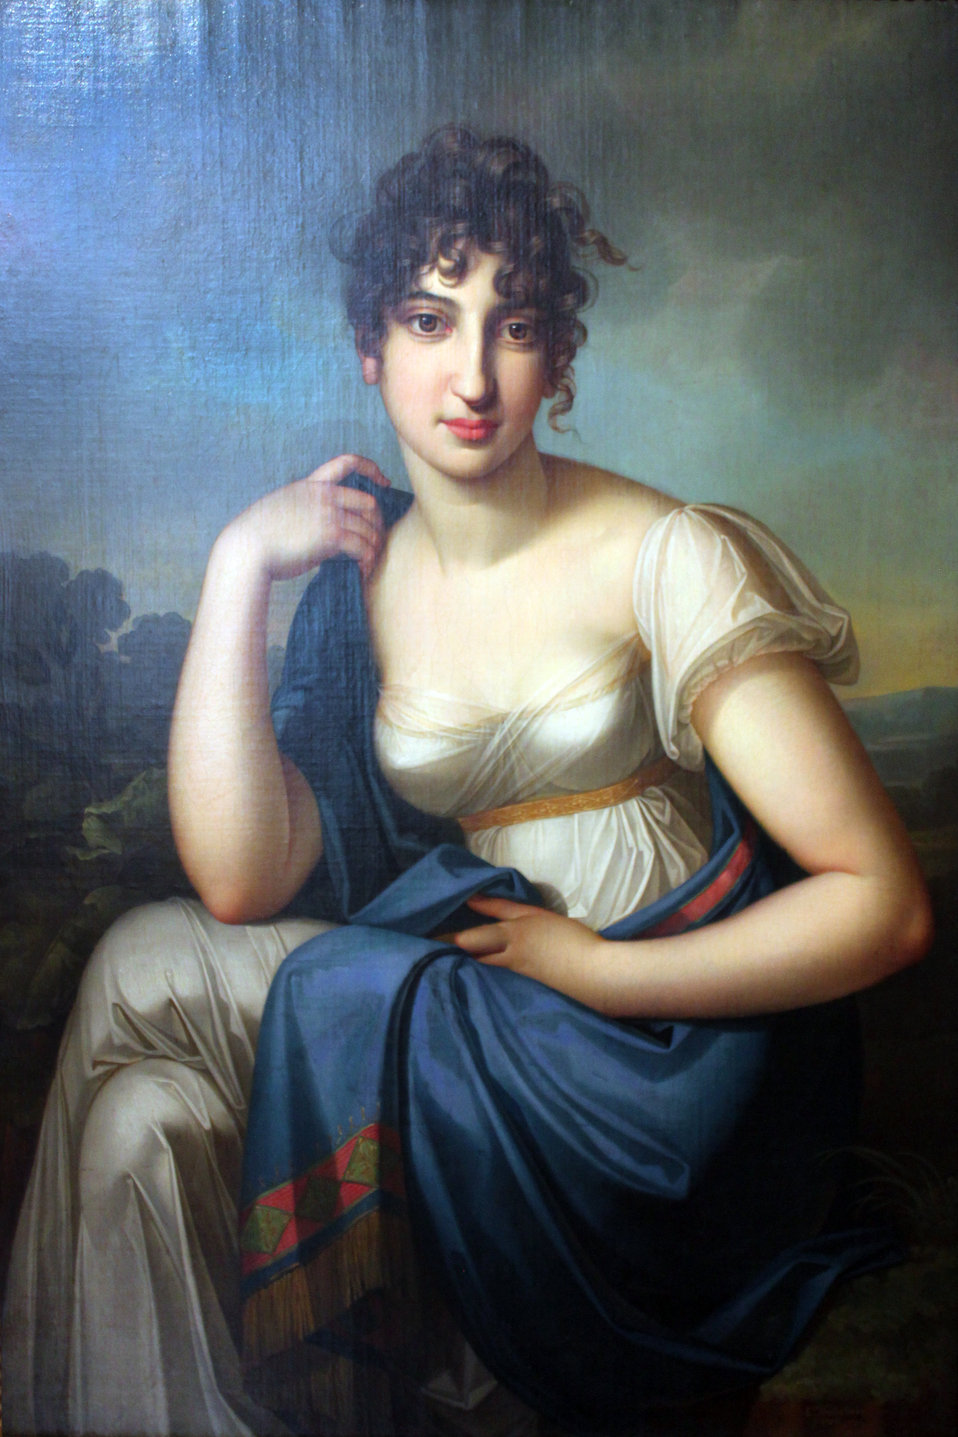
1803 Kretschmar Portrait Amalie Beer anagoria